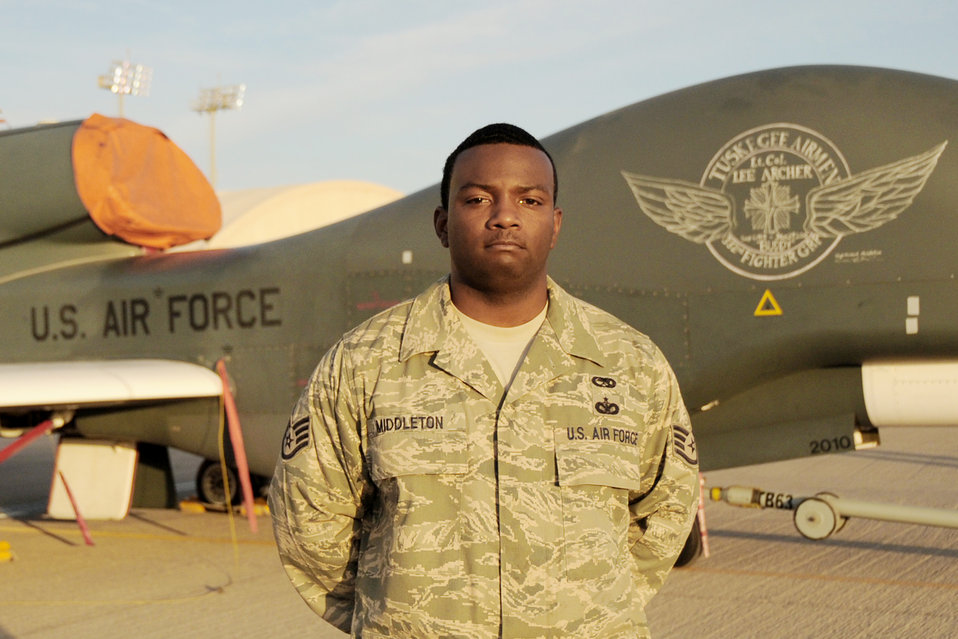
Deployed Airmen honor Tuskegee great with nose art

Staff Sgt. Michael Middleton created a chalk nose art design honoring a Tuskegee Airman on an RQ-4 Global Hawk at an air base in Southwest Asia. Sergeant Middleton is assigned to the Global Hawk aircraft maintenance unit of the 380th Expeditionary Aircraft Maintenance Squadron. Tuskegee Airman Lt. Col. Lee Archer died Jan. 27, 2010, in New York City.